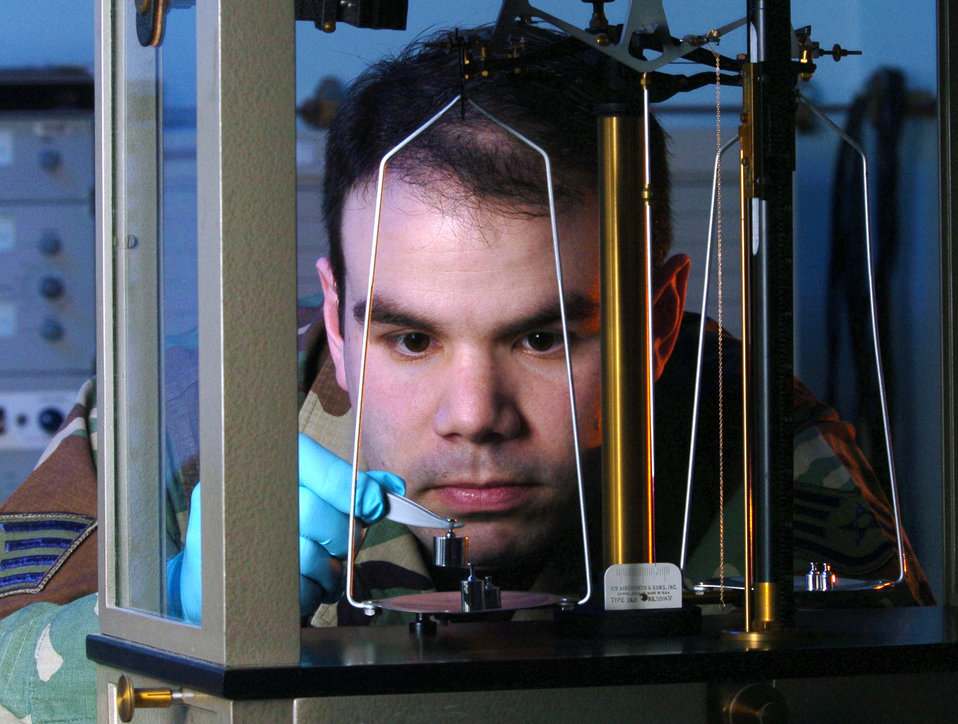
Balanced business

YOKOTA AIR BASE, Japan -- Staff Sgt. Keith Malloy uses precision balance equipment to examine standard weights during a routine check here. He is a precision measurement equipment laboratory technician assigned to the 374th Maintenance Squadron.